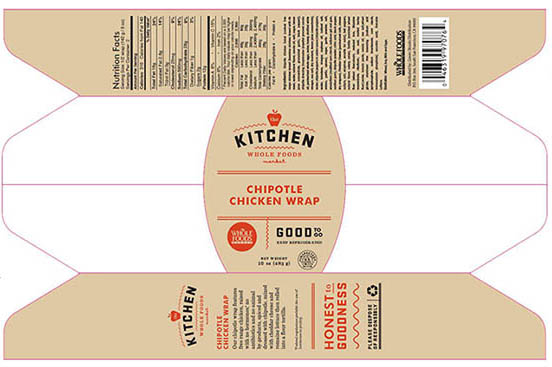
RECALLED – Chipotle Chicken Wrap

April 4, 2014 – Product Recall – Whole Foods Market’s Northern California Region Recalls Chipotle Chicken Wraps Due to Undeclared Fish Allergen.